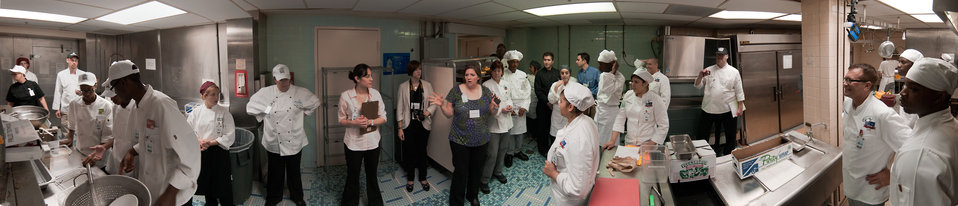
Healthy Schools Campaign Sara Klinzing briefs the six finalist teams of student chefs, mentors and teachers before cooking begins for the Cooking Up Change, National Healthy Cooking Competition at the USDA in Washington, DC, on Monday, May 23, 2011. (270 degree virtual panorama using multiple images taken within one minute.)